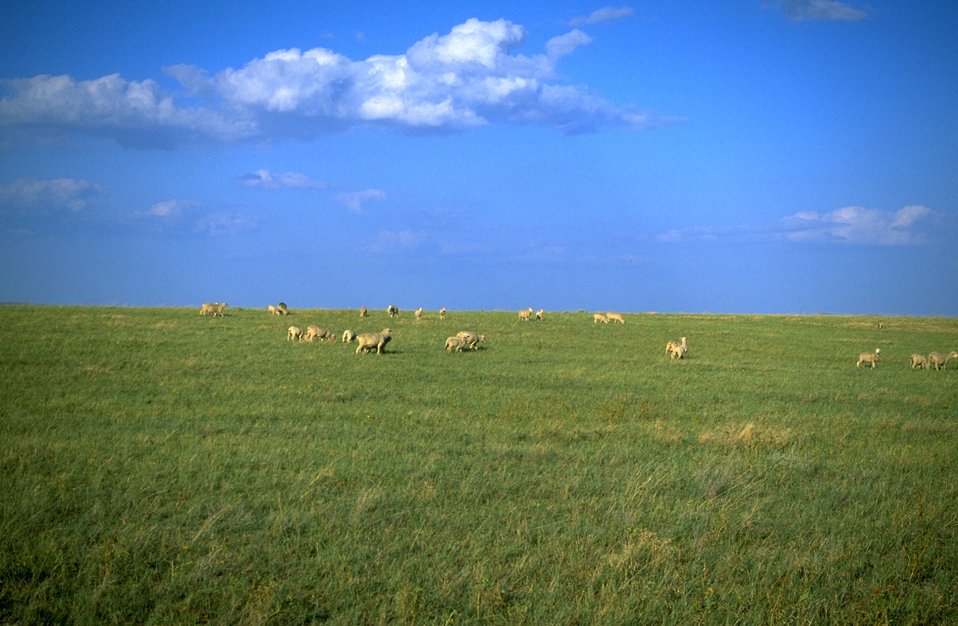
Sheep Grazing